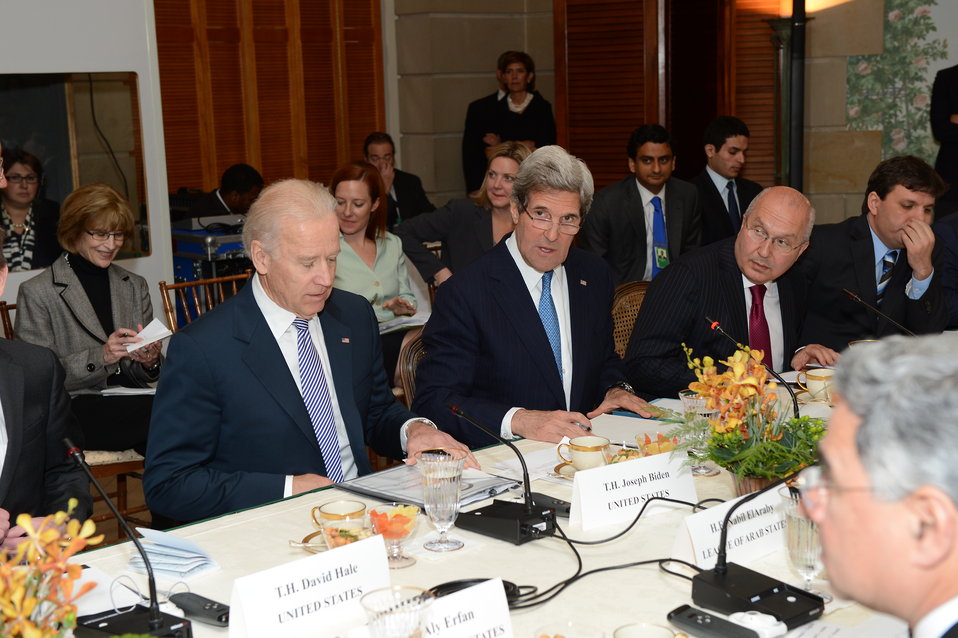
Secretary Kerry and Vice President Biden Participate in a Meeting with the Arab League Delegation

U.S. Secretary of State John Kerry, with U.S. Vice President Joseph Biden, holds a meeting with the Arab League delegation, led by Qatari Prime Minister and Foreign Minister Sheikh Hamad bin Jassim bin Jabr Al-Thani, at the Blair House in Washington, D.C., on April 29, 2013.